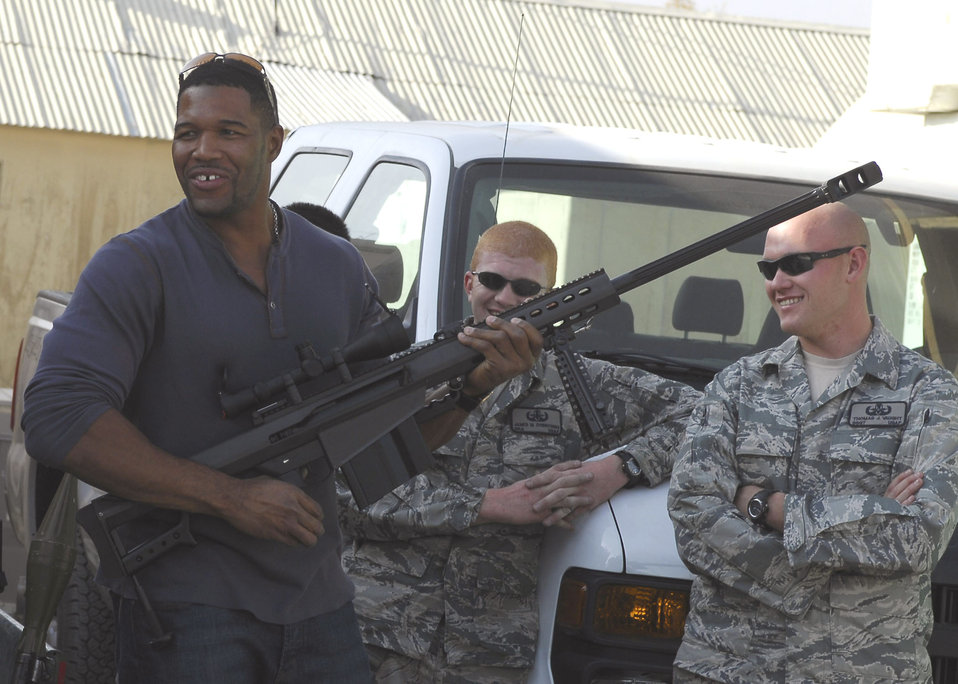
'Fox NFL Sunday' team visits Bagram

Michael Strahan, announcer with